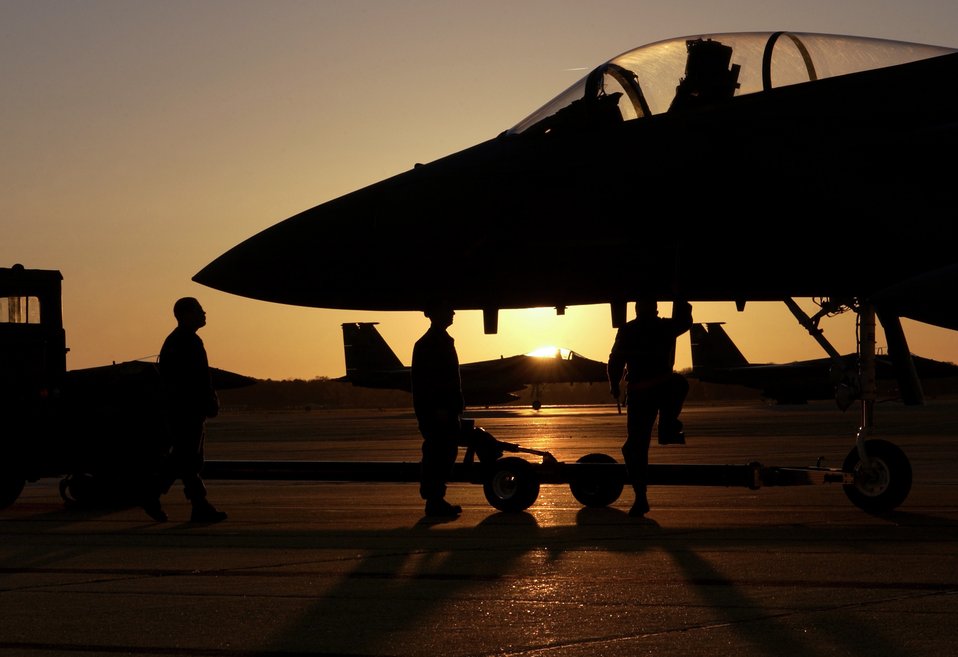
Sun sets on flying mission

LANGLEY AIR FORCE BASE, Va. -- Crew chiefs with the 1st Aircraft Maintenance Squadron here tow an F-15 Eagle at the end of the day.